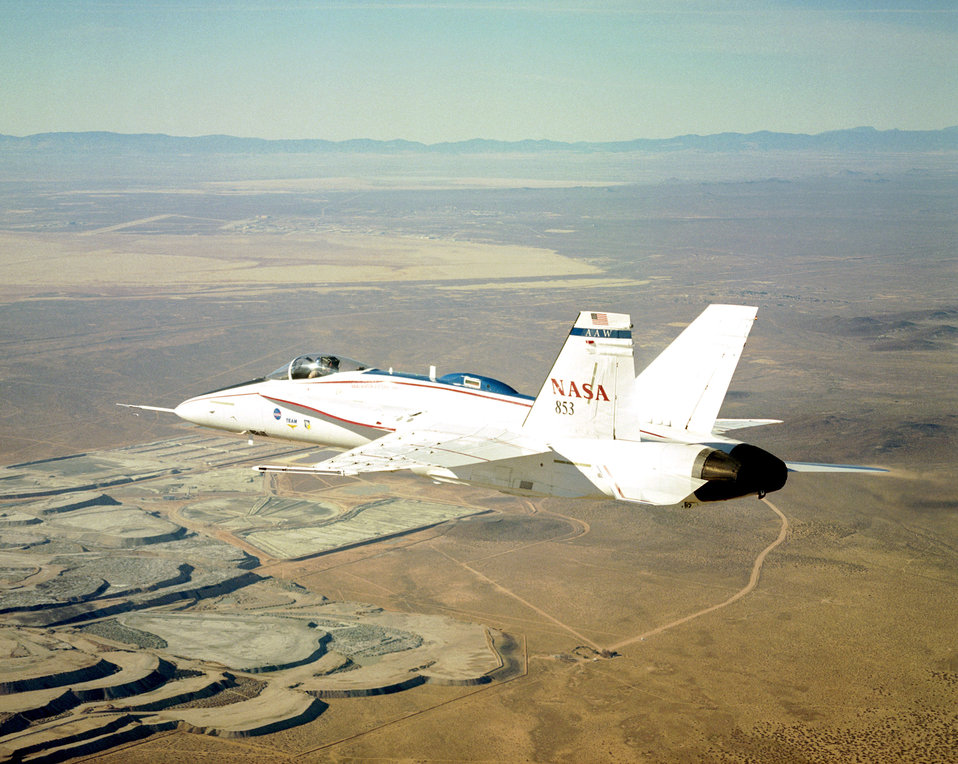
Wing warping could change shape of future aircraft

OVER EDWARDS AIR FORCE BASE, Calif. -- NASA's modified Active Aeroelastic Wing F/A-18 skims over the countryside during a recent research flight.